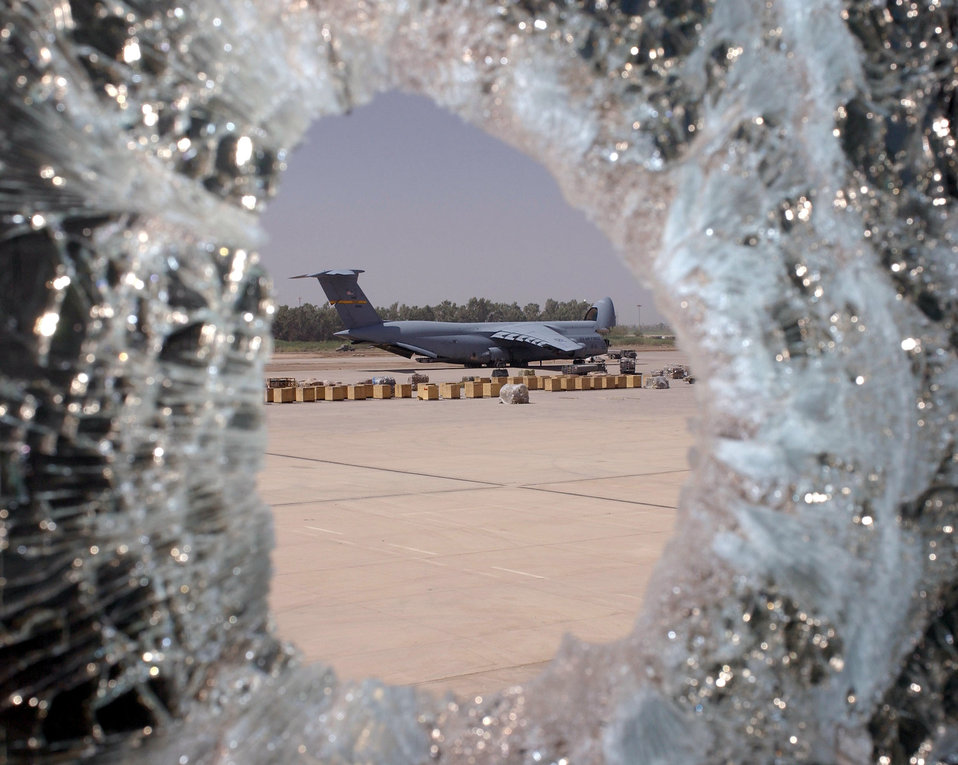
Emerging galaxy

BAGHDAD, Iraq -- Seen through a hole in a window at Baghdad International Airport, a C-5 Galaxy sits on the ramp June 25. The aircraft deployed from Dover Air Force Base, Del., to support Operation Iraqi Freedom.